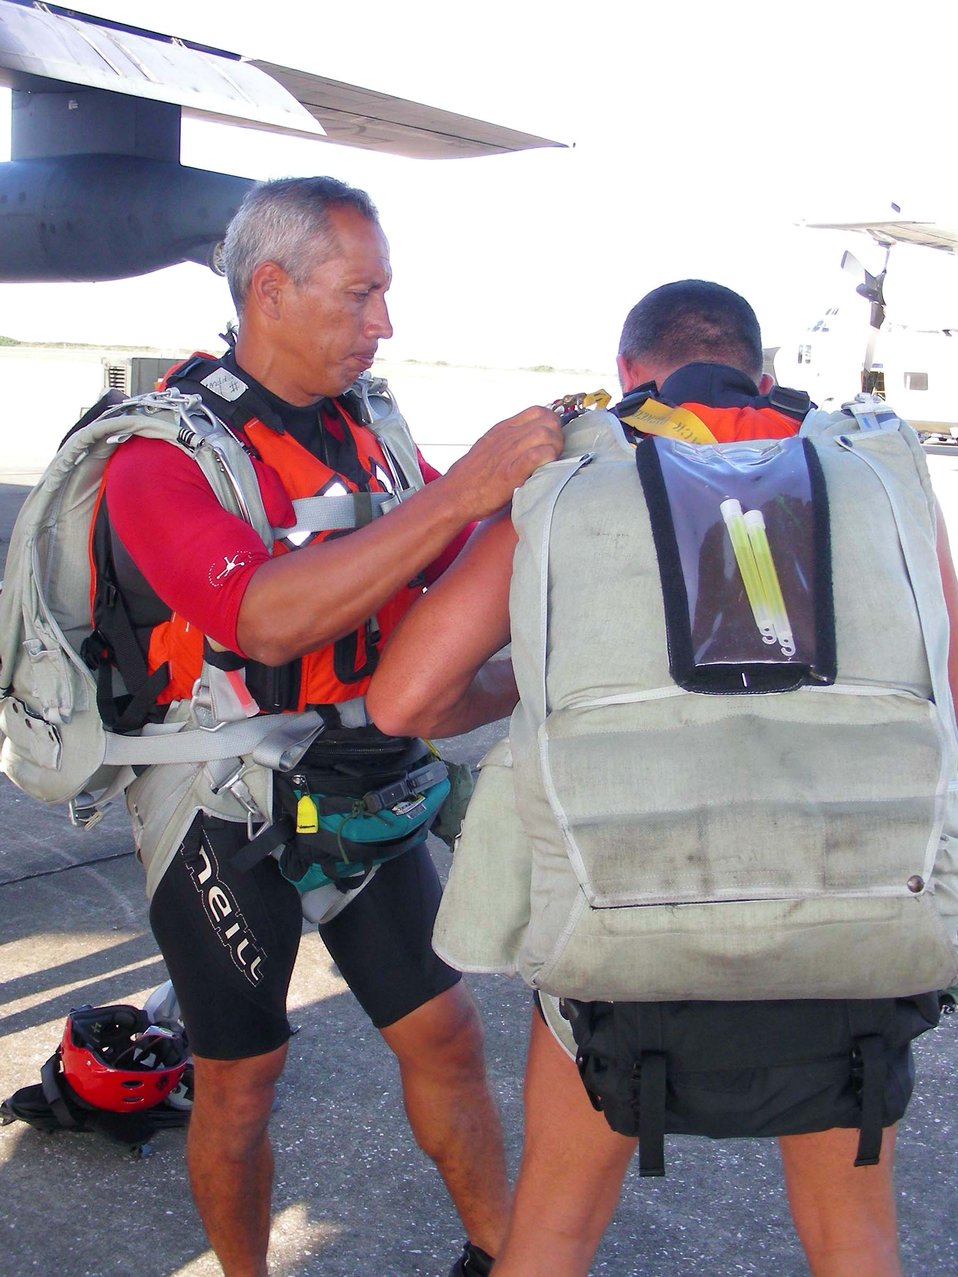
Pararescuemen train for space shuttle launch recovery

After donning and adjusting his own parachute, Master Sgt. Alexander Abbey checks a fellow pararescueman's parachute before boarding an HC-130P/N on Friday, June 23, at Patrick Air Force Base, Fla. The pararescuemen, assigned to the 308th Rescue Squadron, were training in open water rescue and recovery techniques to prepare them for space shuttle launch recovery support.